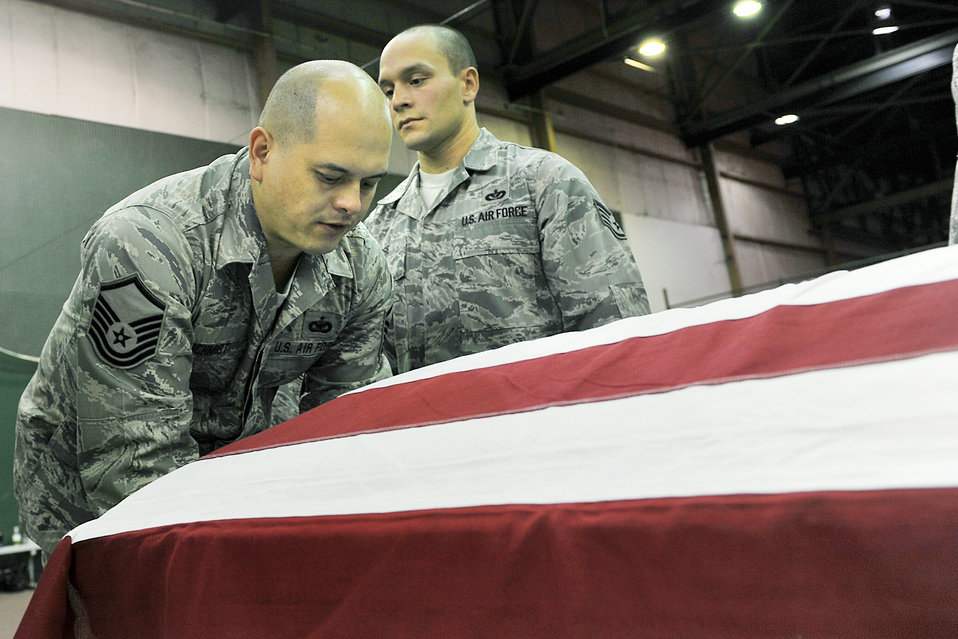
Lift with honor

Master Sgt. David Schmidt prepares to lift a casket during a training session Oct. 21, 2009, at Offutt Air Force Base, Neb. Air Force Honor Guard trainers visited the base to evaluate and help sharpen the skills of base honor guard members. Sergeant Schmidt is an Offutt AFB honor guard member.